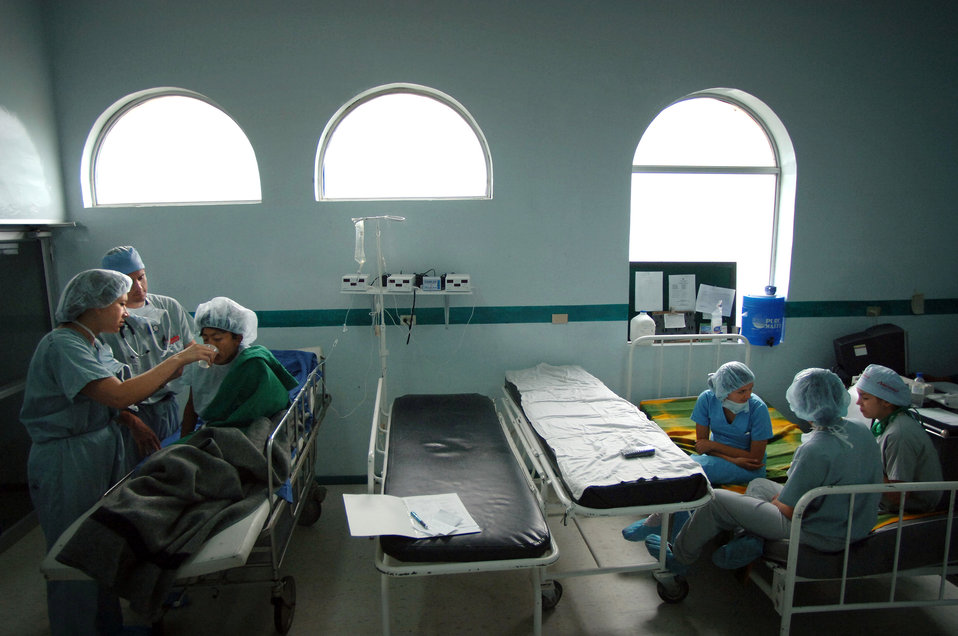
Air Force medics conduct plastic surgery clinic

CUENCA, Ecuador -- Maj. Patricia Bradshaw and Capt. (Dr.) Dale Capener provide a drink to 14-year-old Adrian Puata after a surgery to repair his cleft lip while Ecuadorian medical students (right) take a break. A seven-person plastic surgery team from Wilford Hall Medical Center at Lackland Air Force Base, Texas, is providing free corrective surgeries to Ecuadorian civilians as part of a 12-day medical readiness training exercise.